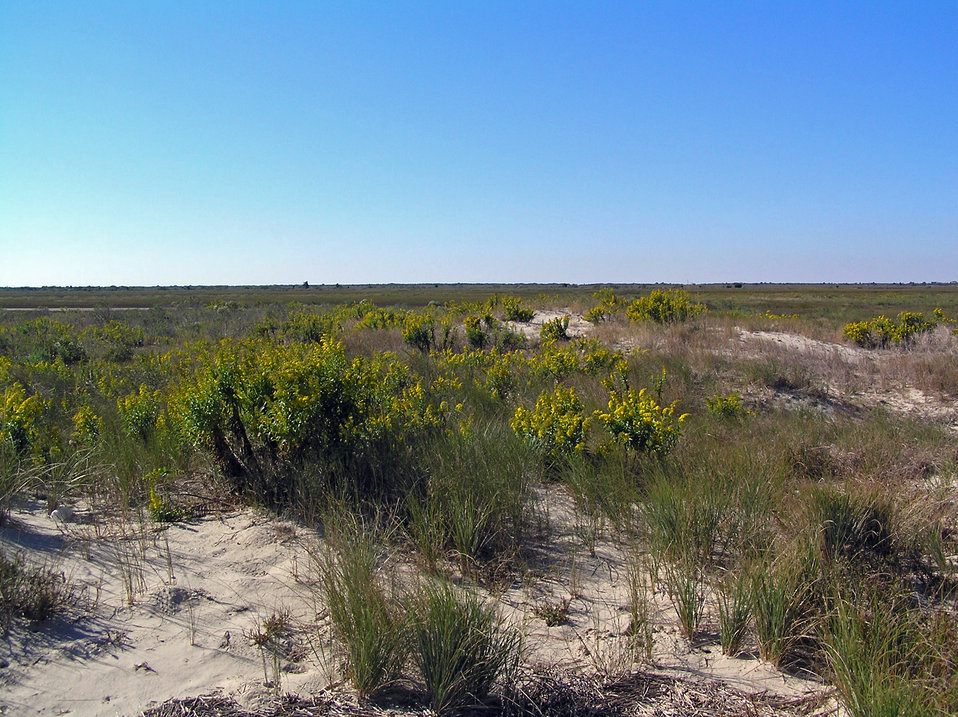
Dunes

Fisherman Island National Wildlife Refuge, VA.